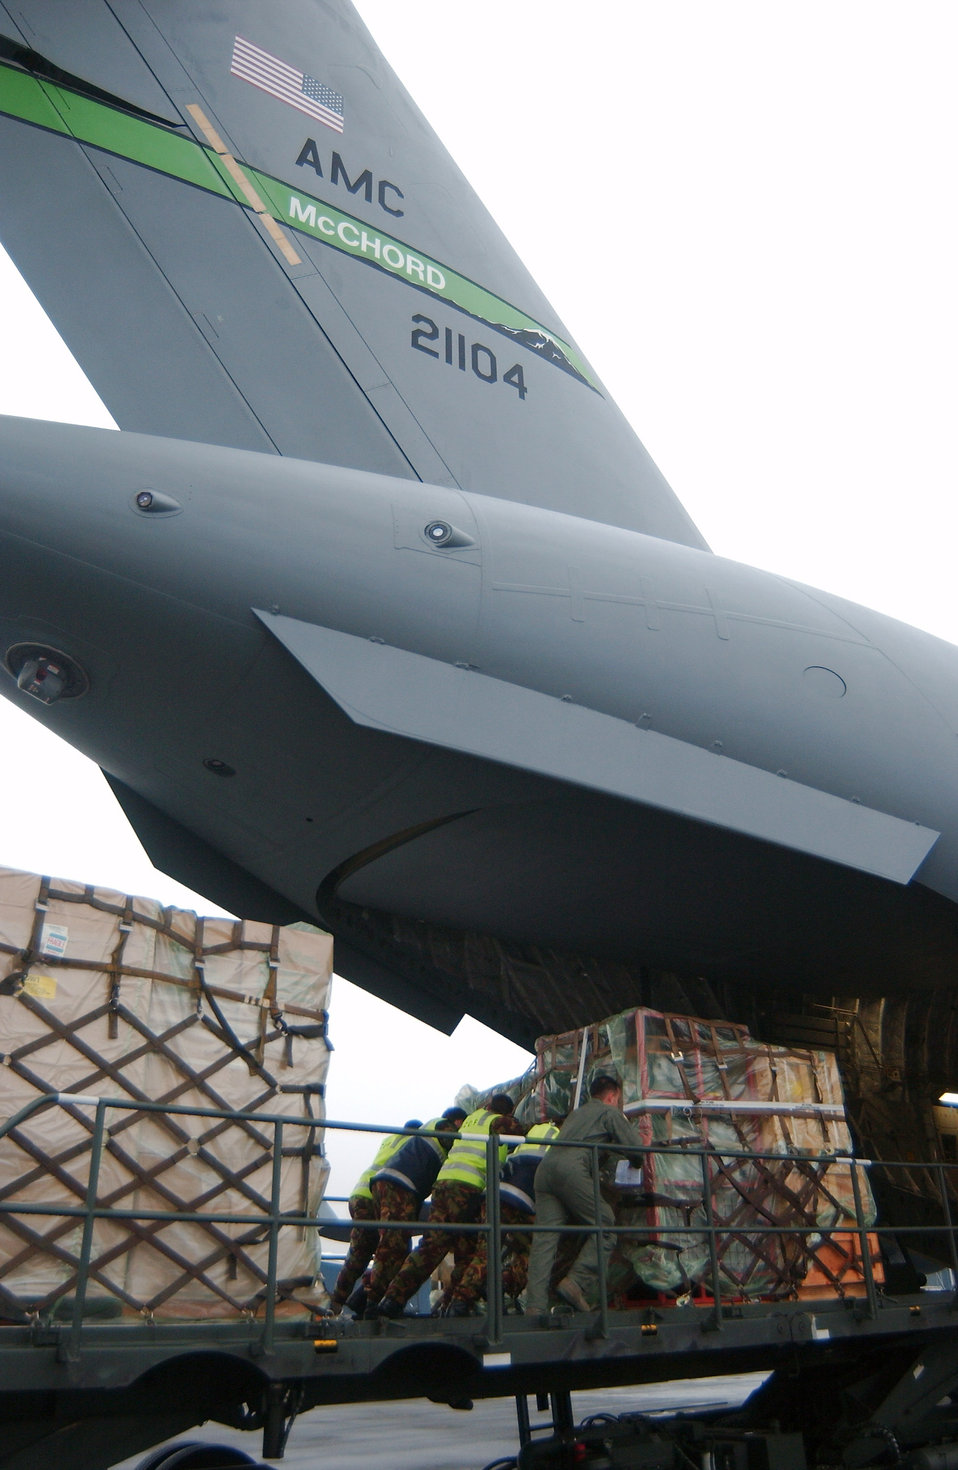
McChord Airmen fuel Operation Deep Freeze

Airmen and members of the New Zealand Defence Force load cargo prior to a Dec. 2 Operation Deep Freeze mission from Christchurch, New Zealand, to Antarctica. The Airmen and the C-17 Globemaster III are from McChord Air Force Base, Wash.